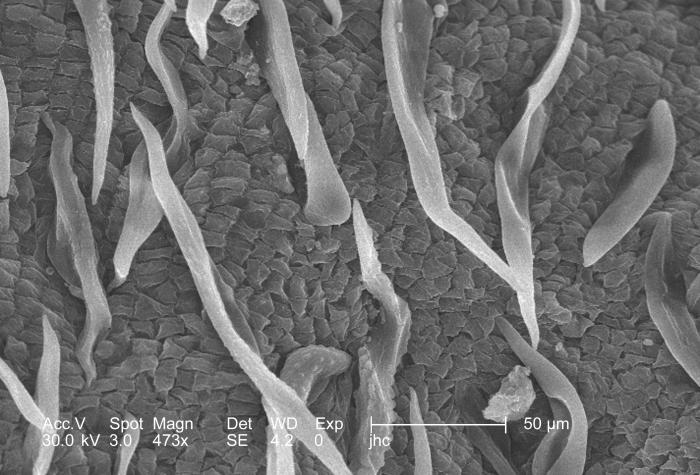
Magnified 473x, this scanning electron micrograph (SEM) revealed some of the morphologic ultrastructural details adorning the surface of a "bract" from a dogwood blossom, Cornus florida. Under this magnified scrutiny, what initially appeared to be a smooth, faintly textured surface, was actually a highly complex surface structure.